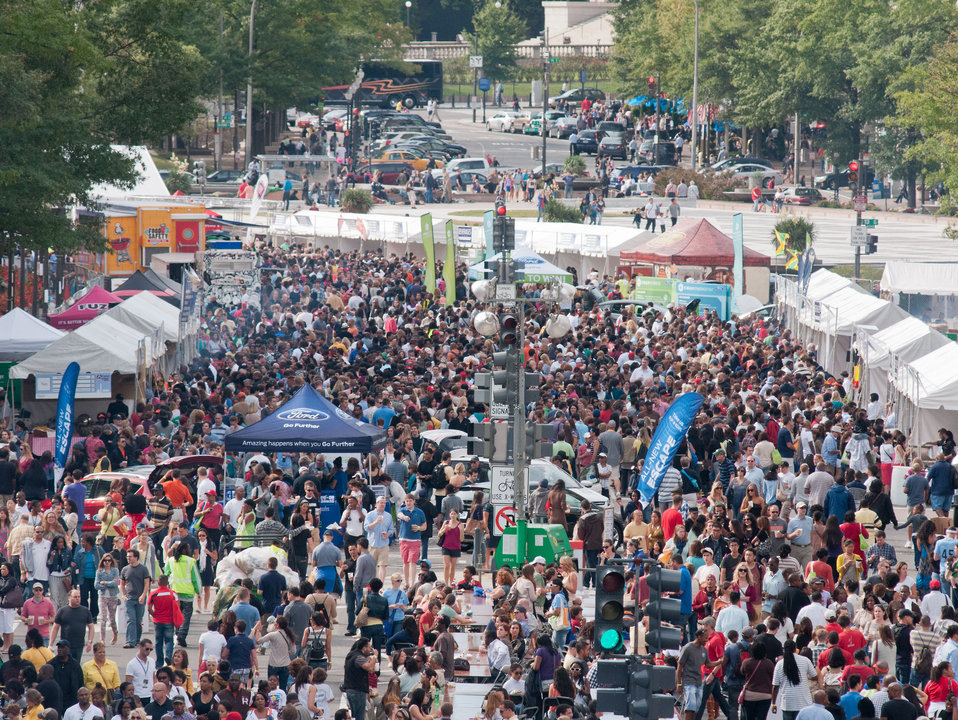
The Taste of D.C., event highlights more than 70 eateries, 30 specialty beer providers, the United Service Organization (USO) Metropolitan Washington, and live bands. It is anticipated that more than 500,000 people will attend over the course of the three-day event, which extends from the White House to the Capitol, along Pennsylvania Ave. in Washington D.C. on Saturday, October 6, 2012. Agriculture Food Safety and Inspection Service specialists present talks and cooking demonstrations. Agriculture’s mobile Discovery Zone is on hand to educate children and parents about the four main principals of food safety – clean, separate, cook and chill.